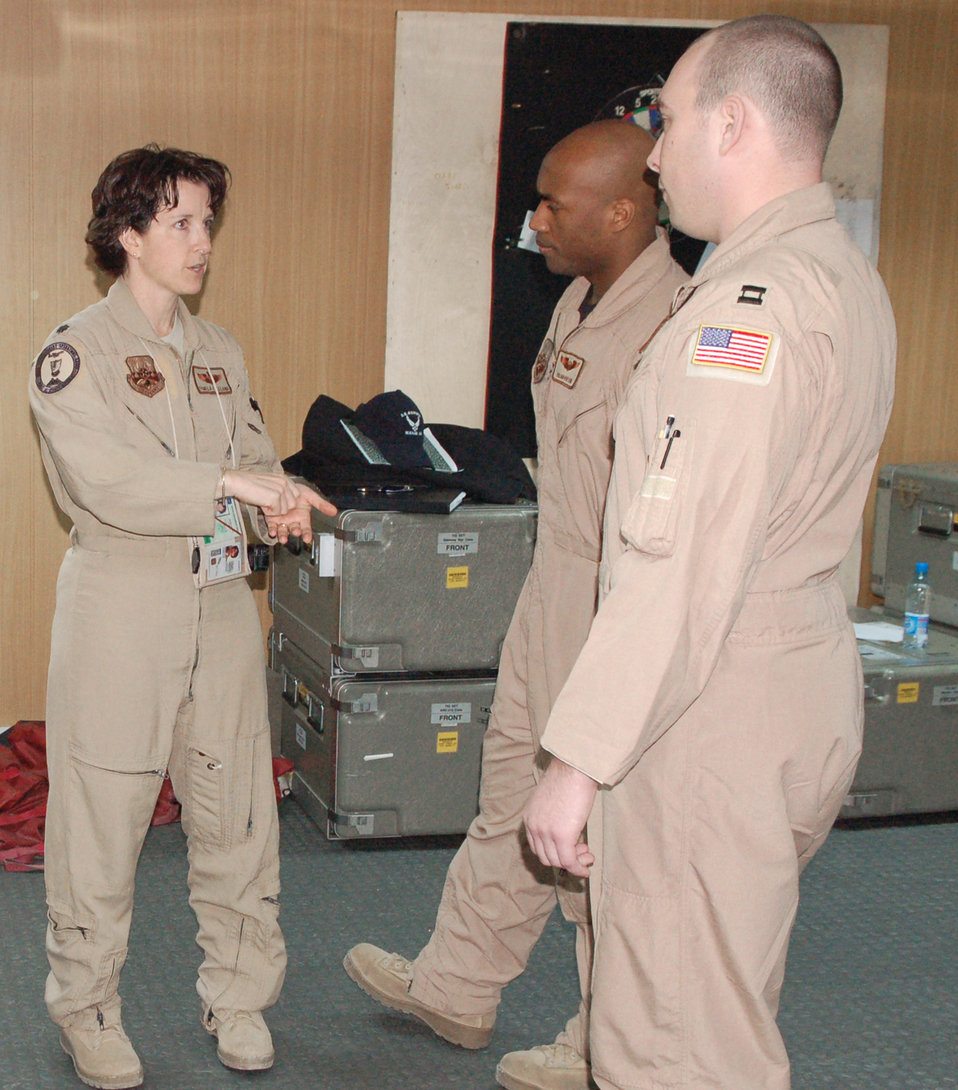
Manas KC-135s revolutionize combat operations

Lt. Col. Pamela Freeland explains the purpose and benefits of the Roll-On-Beyond-Line-Of-Sight Enhancement System to Capt. Julian Benton (rear) and Capt. Walter Hale March 13 at Manas Air Base, Kyrgyzstan. Both captains are KC-135 Stratotanker pilots deployed from the 92nd Air Refueling Squadron at Fairchild Air Force Base, Wash. Colonel Freeland is the chief of standardization and evaluation for the 376th Expeditionary Operations Group deployed from the 97th Training Squadron at Altus AFB, Okla.